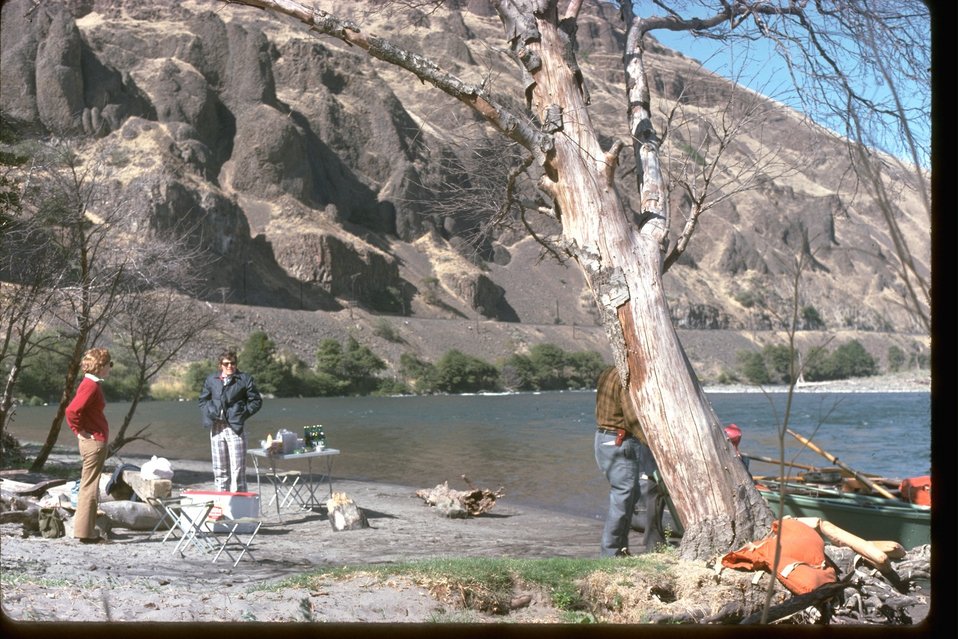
Boaters at their camp site along the Deschutes River.